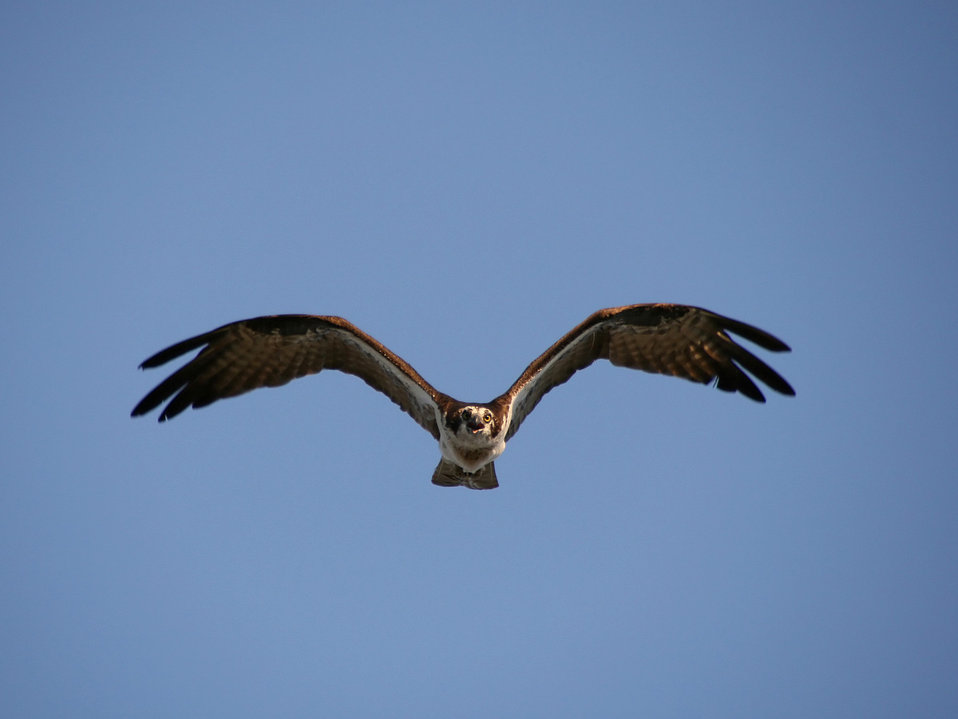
Osprey

Photographed at Montezuma National Wildlife Refuge.